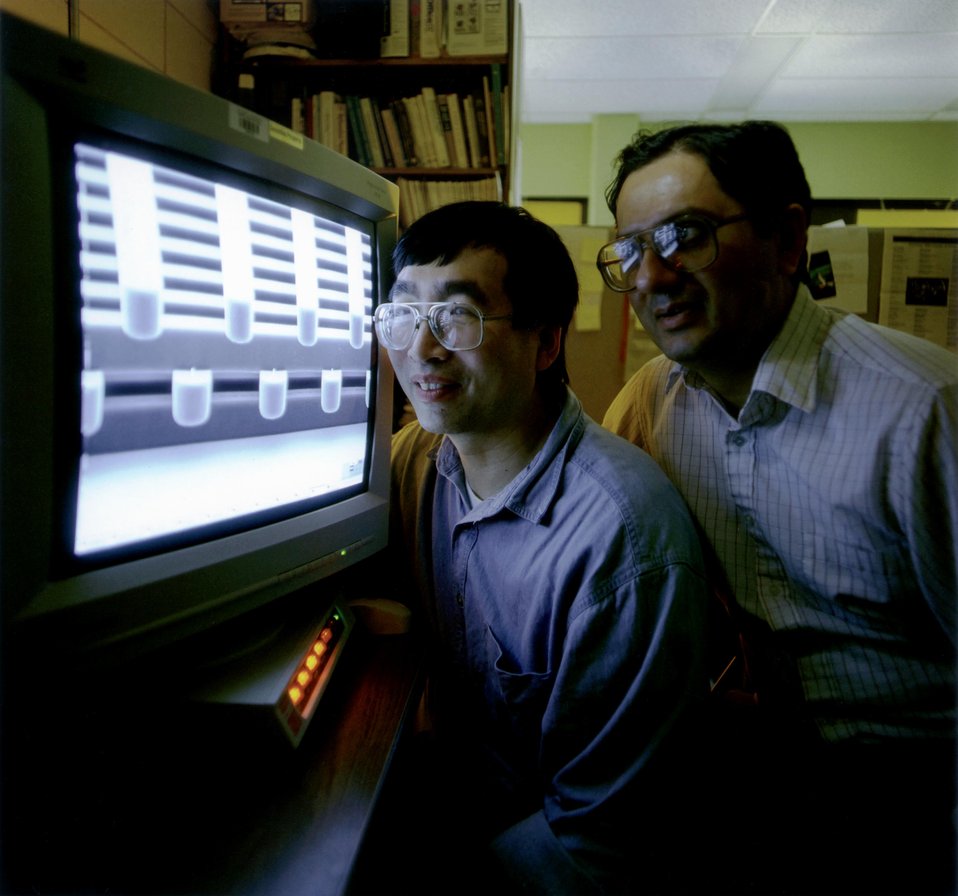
AMES SCIENTISTS EXAMINE THE COMPUTER IMAGE OF PHOTONIC CRYSTAL.
THE PHOTONIC CRYSTAL SEEN IN THE COMPUTER IMAGE, WAS BUILT BY RESEARCHERS AT SANDIA NATIONAL LABORATORIES USING AMES LAB'S ORIGINAL LAYERED LATTICE DESIGN. PHOTONIC CRYSTALS DO NOT OCCUR NATURALLY, THEY MUST BE MADE. SCIENTISTS ARE PURSUING THIS TASK BY MANIPULATING PHOTONS TO CONTROL ELECTROMAGNETIC RADIATION FOR POTENTIAL APPLICATIONS THAT INCLUDE OPTICAL SWITCHES, MICROFABRICATED LASERS, WAVEGUIDES, LIGHT EMITTING DIODES AND TELECOMMUNICATIONS.